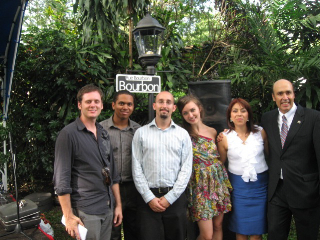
July 4th Celebration at U.S. Embassy in Honduras

Sasha Masakowski poses for a photo with Lisett Llorens and U.S. Ambassador to Honduras Hugo Llorens on “Bourbon Street” at the U.S. Independence Day celebration at the U.S. Ambassador’s residence in Tegucigalpa, Honduras, on July 2, 2010.